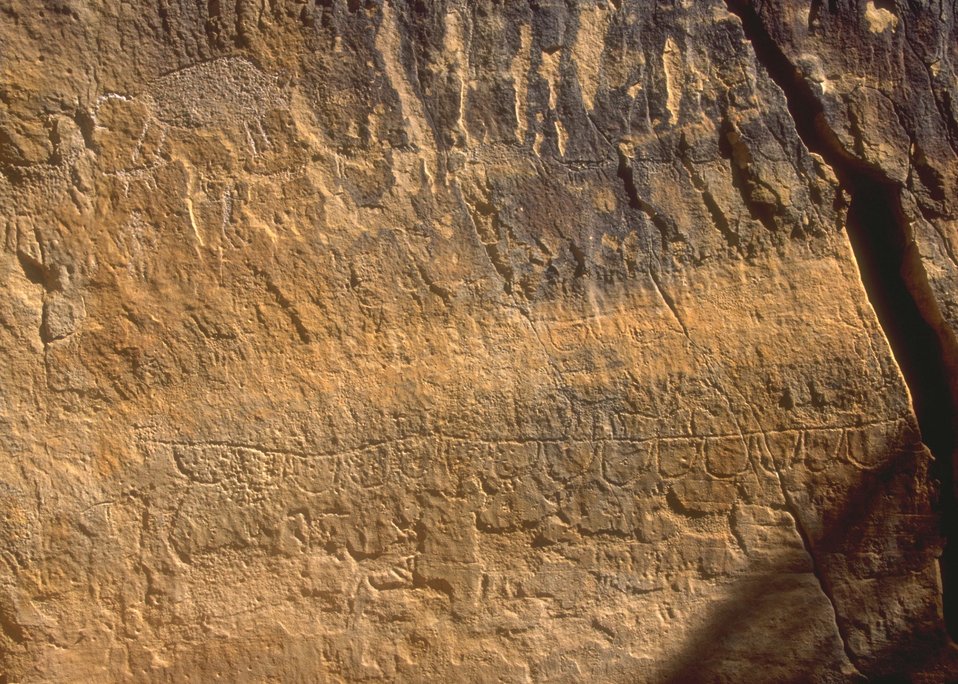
Petroglyph panel in Whoopup Canyon, Newcastle Field Office.